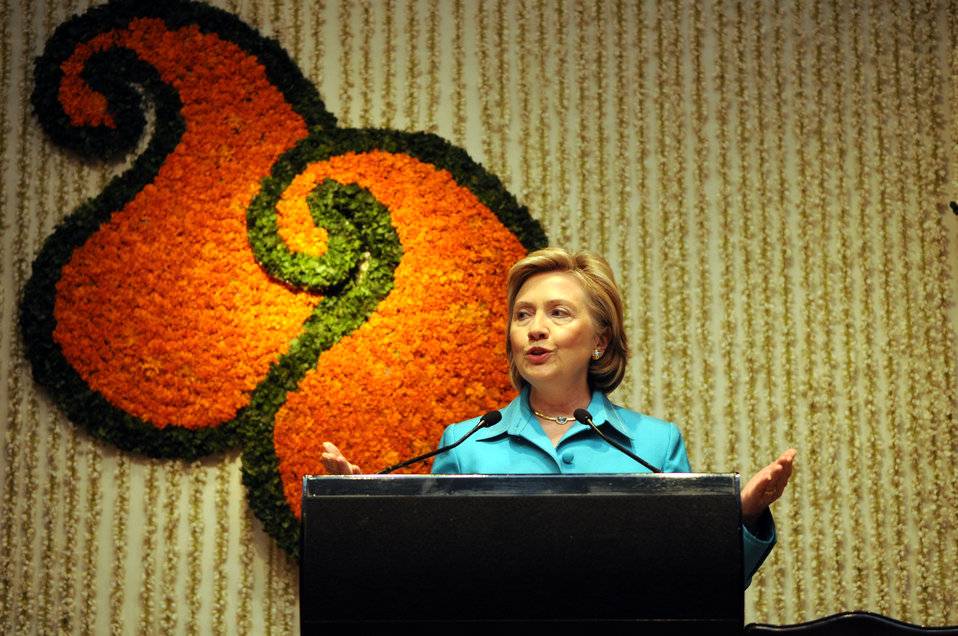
Secretary Clinton Addresses Mumbai Consulate Staff

U.S. Secretary of State Hillary Rodham Clinton addresses Mumbai Consulate General staff during an event at the Crystal Ballroom of the Taj Palace Hotel in Mumbai, India July 19, 2009.